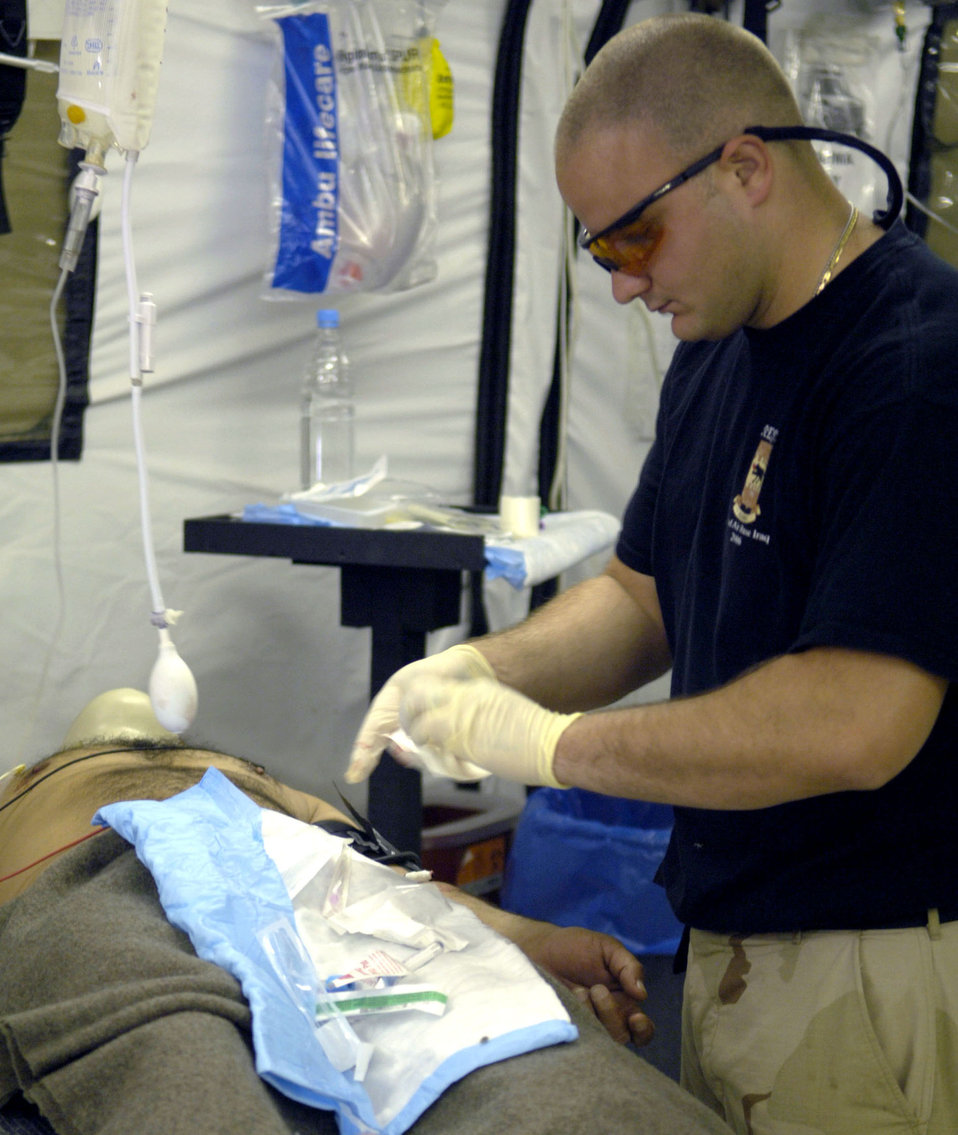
Specialized care

Senior Airman Eduardo Clemente treats an injured Iraqi policeman at the Air Force Theater Hospital in Balad Air Base, Iraq, on Aug. 2. The hospital provides Level 1 trauma and specialized medical care. Airman Clemente is a medical technician assigned to the 332nd Expeditionary Medical Group.